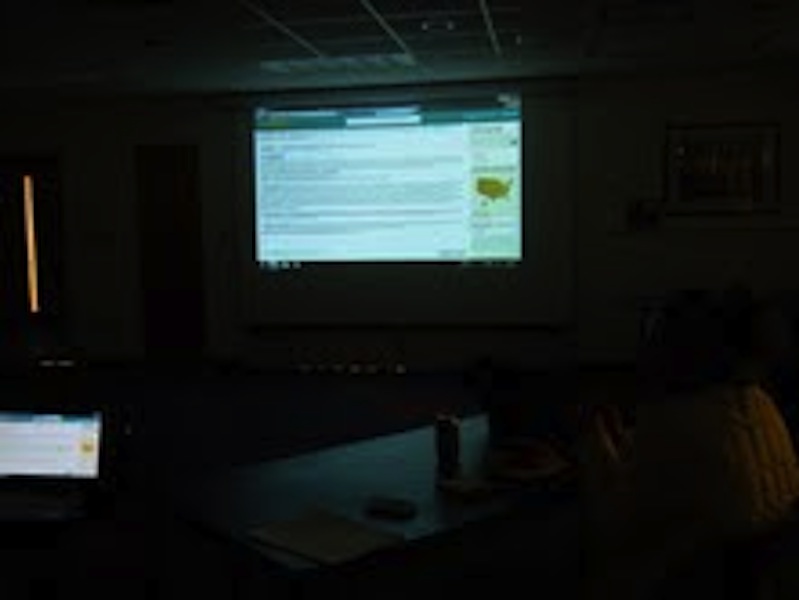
Chat Day 2013

Perrysburg, Oh. NDFW 2013 Chat Day event with Prevention Partners Program.